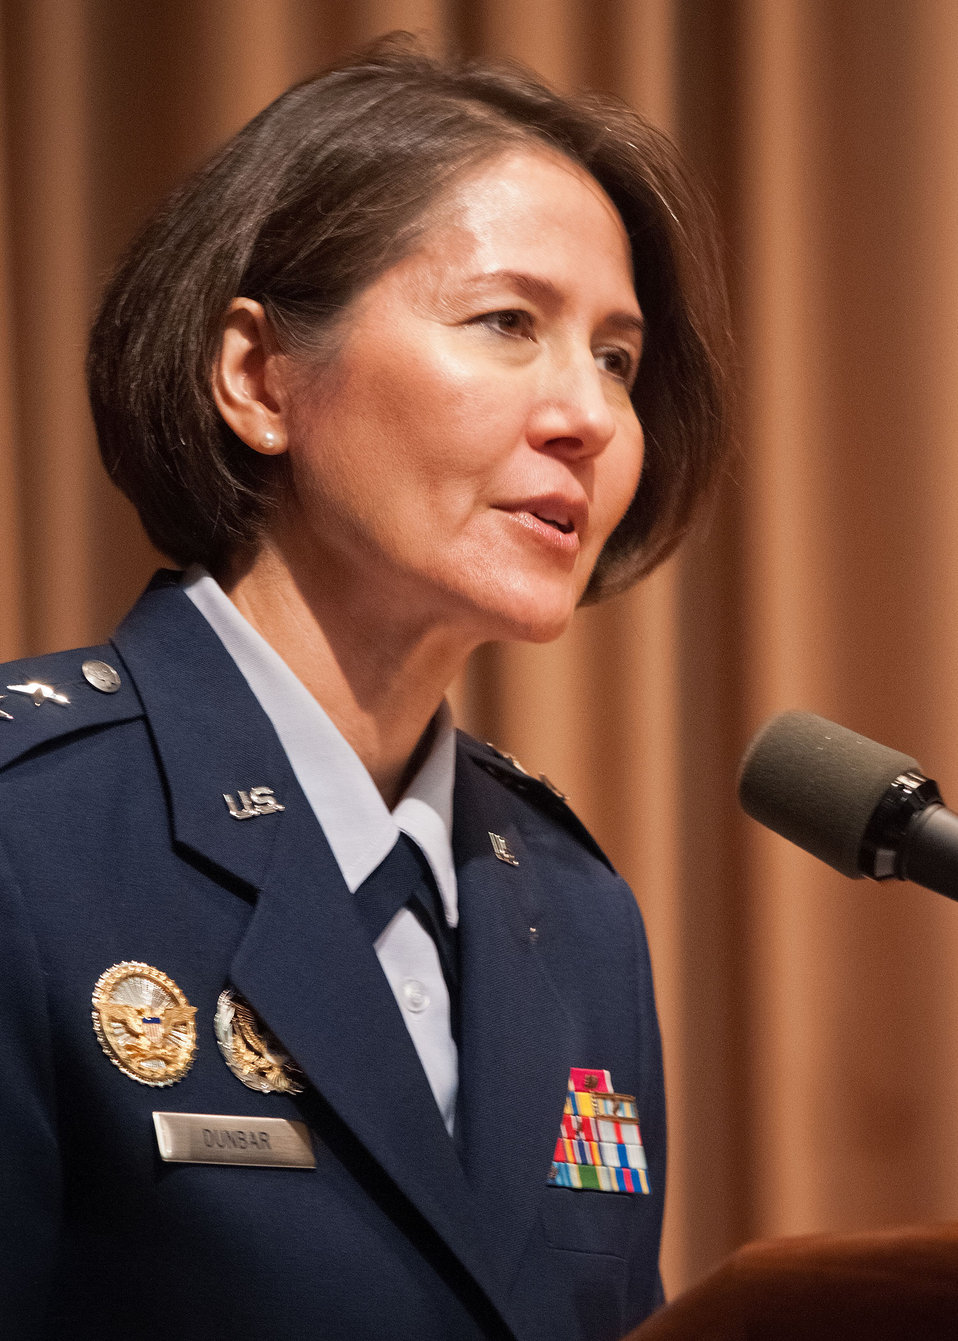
Major General Sharon K.G. Dunbar, Commander, Air Force District of Washington, Joint Base Andrews, Maryland was the keynote speaker at the United States Department of Agriculture Veterans Day Observance: Honoring All Who Served, in Washington, DC Wednesday, November 7, 2012. The Air Force District of Washington is the Air Force voice and component to the Joint Forces Headquarters-National Capital Region.